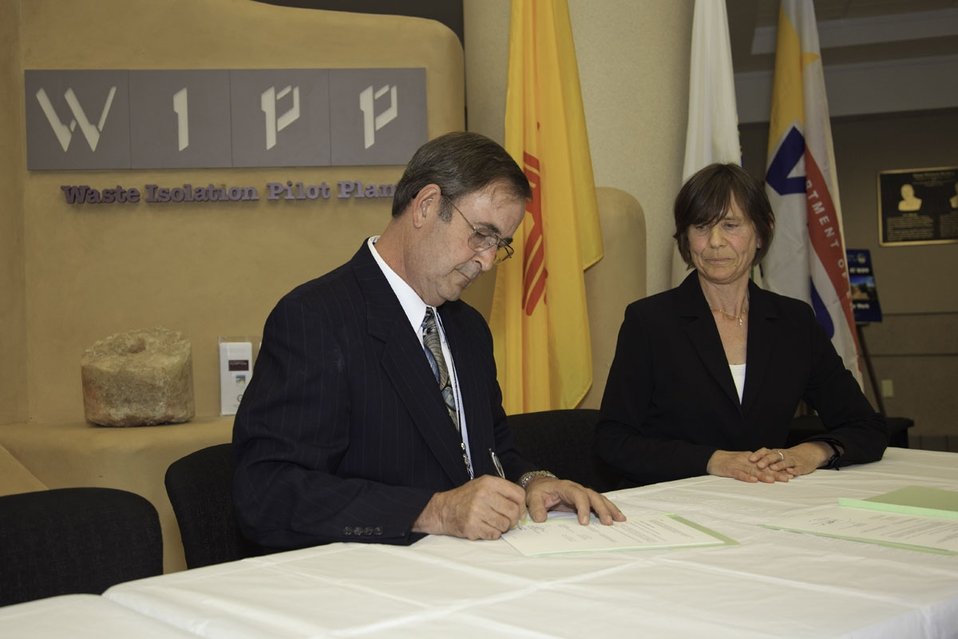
DOE Hosts German Energy Official, Signs MOU to Share WIPP Information

Dr. Dorothee Műhl, Deputy Director General Manager of Germany’s Federal Ministry of Economics and Technology (BMWi), and other German officials visited WIPP, the U.S. Department of Energy’s (DOE’s) underground repository for disposal of defense-generated transuranic (TRU) waste, on September 14 and signed a Memorandum of Understanding (MOU) agreeing to an exchange of knowledge between the two nations on matters related to radioactive waste disposal.